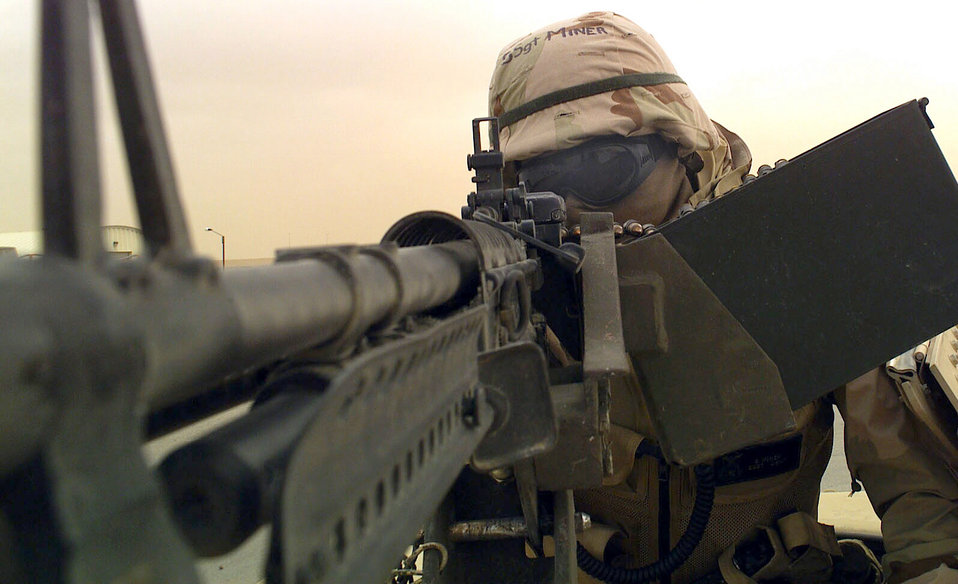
Extreme gate guard

OPERATION IRAQI FREEDOM -- A defender with the 410th Air Expeditionary Wing keeps a vigilant eye and an M-60 machine gun on the front gate during a heavy sandstorm March 25. The 410th flies missions from a forward-deployed location to support Operation Iraqi Freedom.